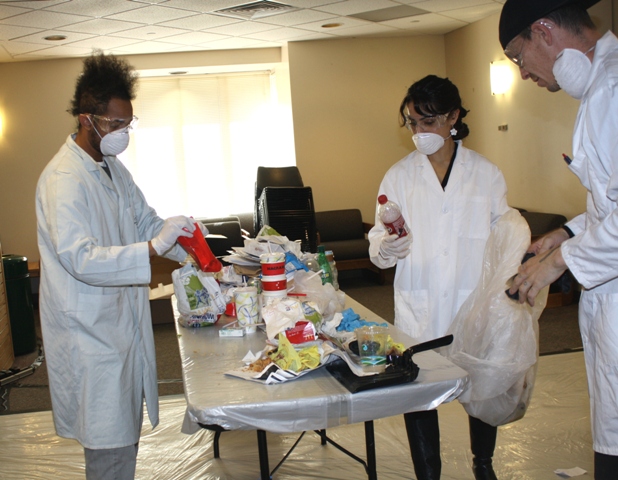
November 15, 2013 - Auraria Campus, Denver, CO

As part of campus participation in the EPA-led Food Recovery Challenge and in celebration of America Recycles Day, staff and students did the first-ever waste audit of the Tivoli Student Union on November 15.